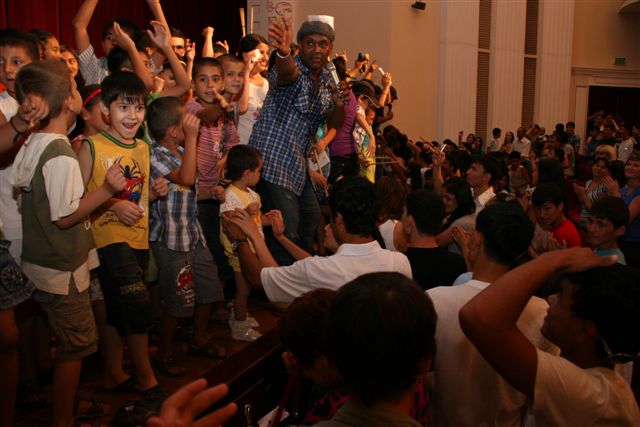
Fans swarm the stage during the Melvin Williams Group's finale in Turkmenabat, Turkmenistan, on June 22, 2011. The Melvin Williams Group is visiting Turkmenistan from June 21-26, 2011, as part of the U.S. Embassy’s annual American Culture Days celebration.